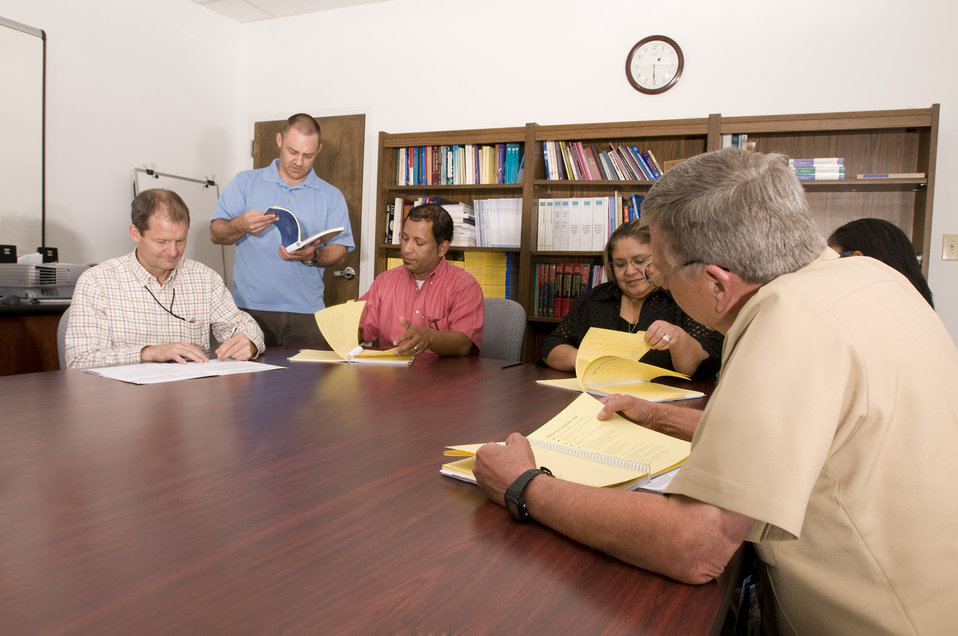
This image depicts a group of healthcare workers seated at a table discussing a strategy they would be implementing, which would guide them through an instructional campaign centered on the education of the diabetic patient to the healthy lifestyle one must implement in order to maintain control over the detrimental effects of this disease. One of the attendees had stood up, and was retrieving literature from a bookshelf behind the group at the back of the conference room, to be used to assist in the meeting.